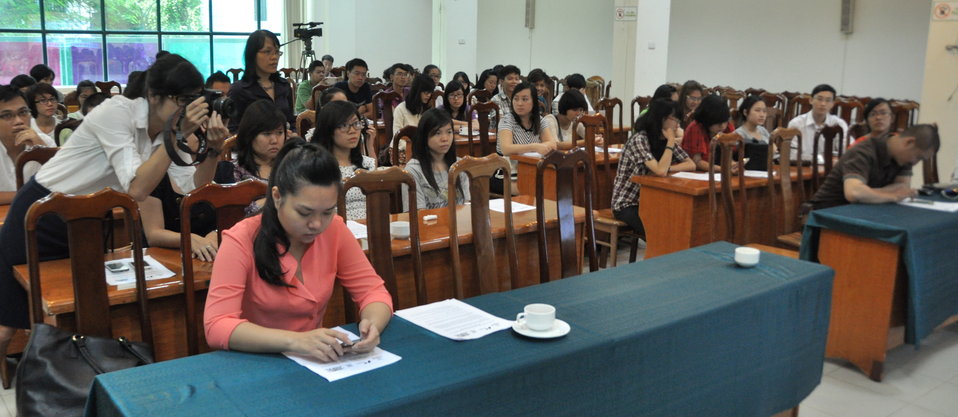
USAID supports scriptwriting contest for students in Hanoi to boost intellectual property rights awareness